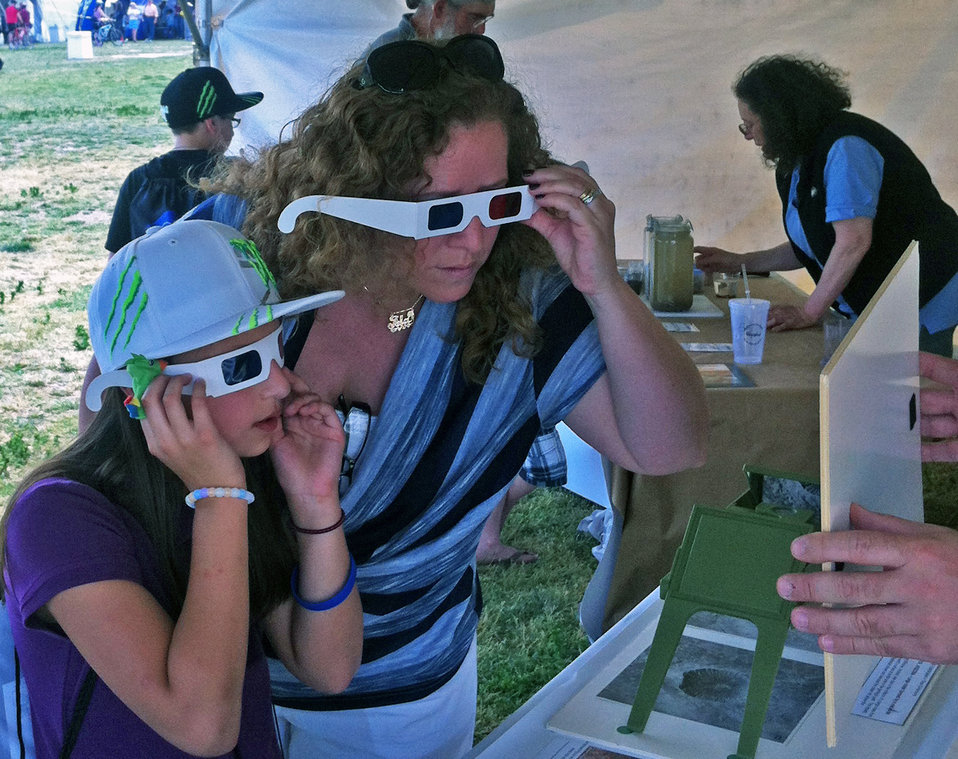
Visitors check out the U.S. Department of Agriculture (USDA) Natural Resources Conservation Service (NRCS) display for Earth Day 2012 on the National Mall in Washington, D.C., on Sunday, April 22, 2012.